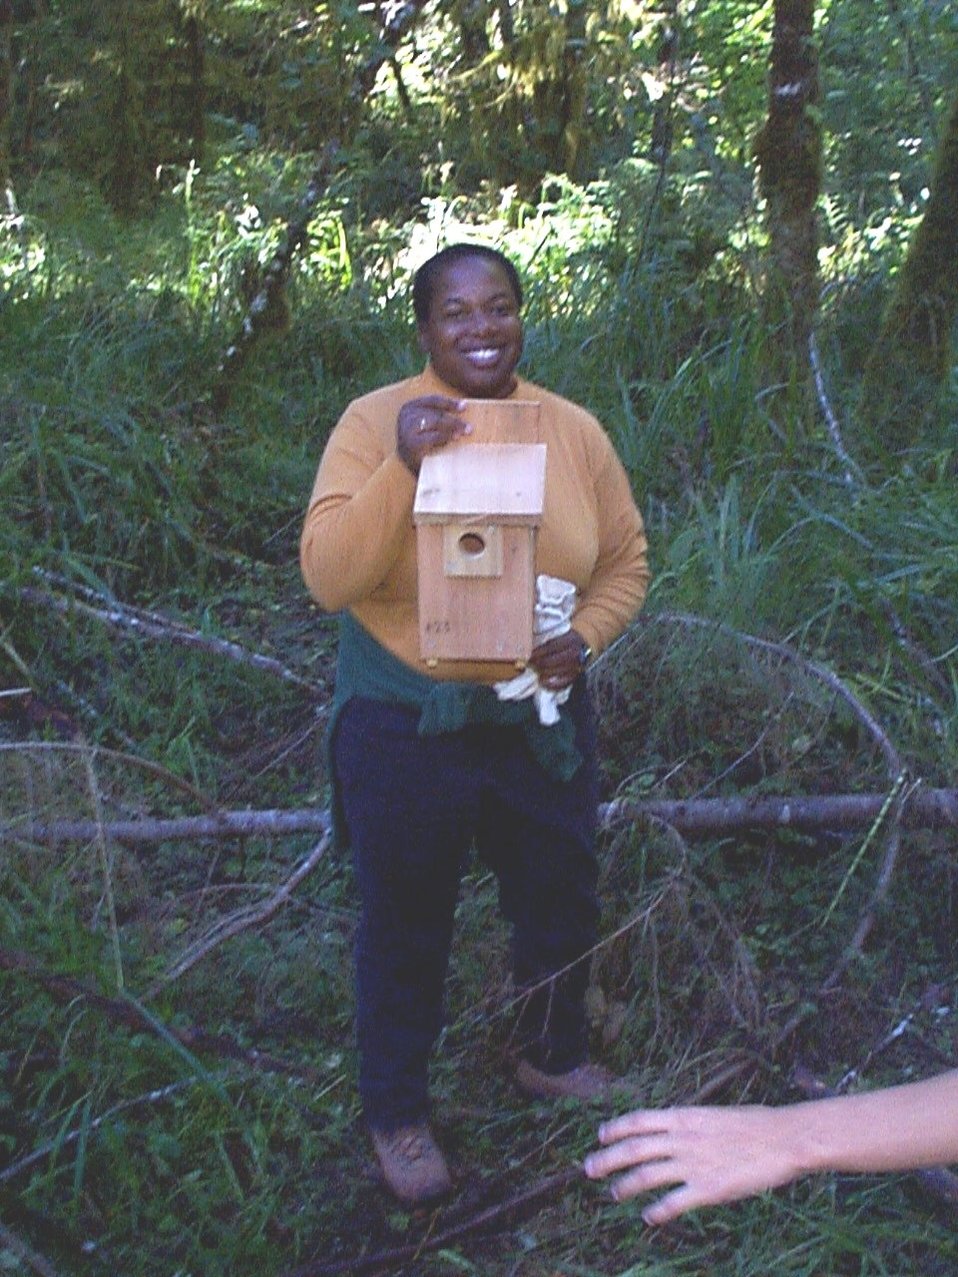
Volunteer installs bird box at McGowen Creek, McKenzie RA.